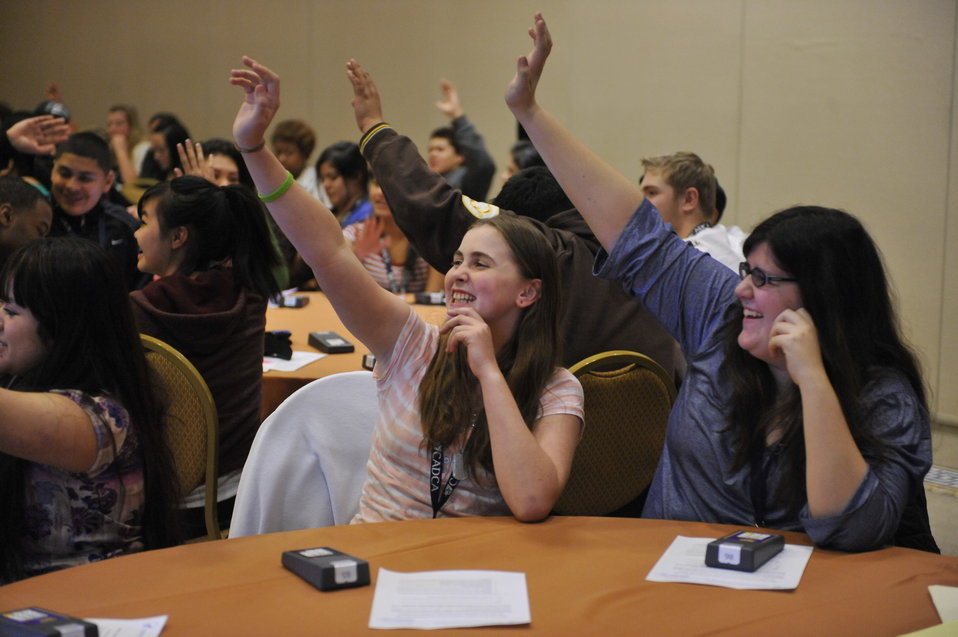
CADCA youth participate in NIDA’s ThinkFast jeopardy event at CADCA’s National Leadership Forum.